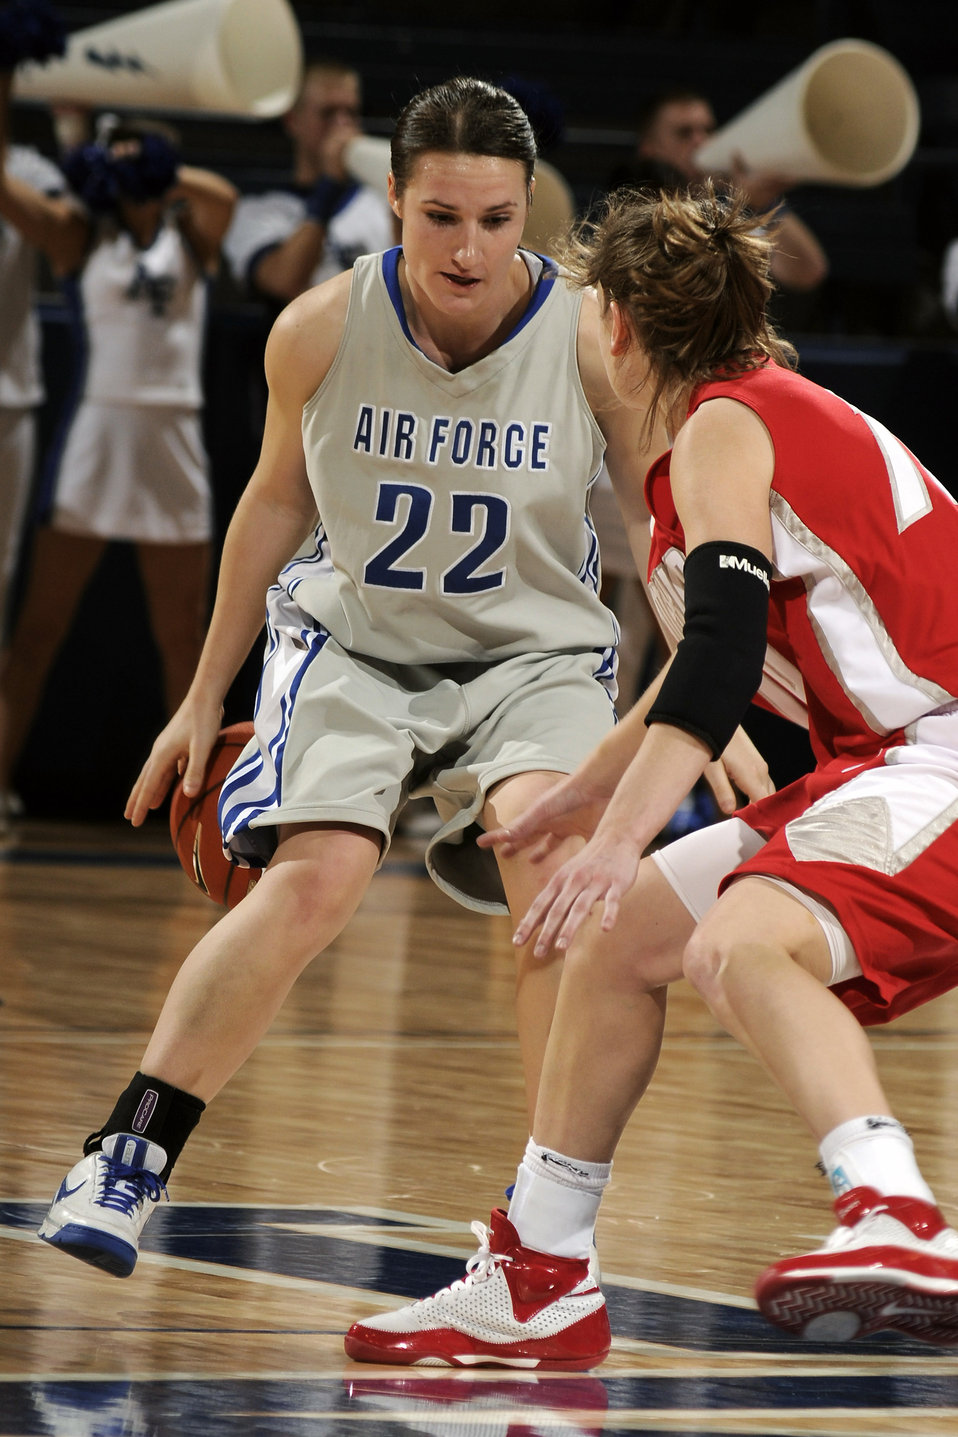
Aiming high

U.S. Air Force Academy sophomore guard Raimee Beck goes behind the back to get by New Mexico's Amy Beggin during the 73-39 loss against the New Mexico Lobos at Jan. 9 at the Academy in Colorado. The Falcons return to action Jan. 14 at Utah.